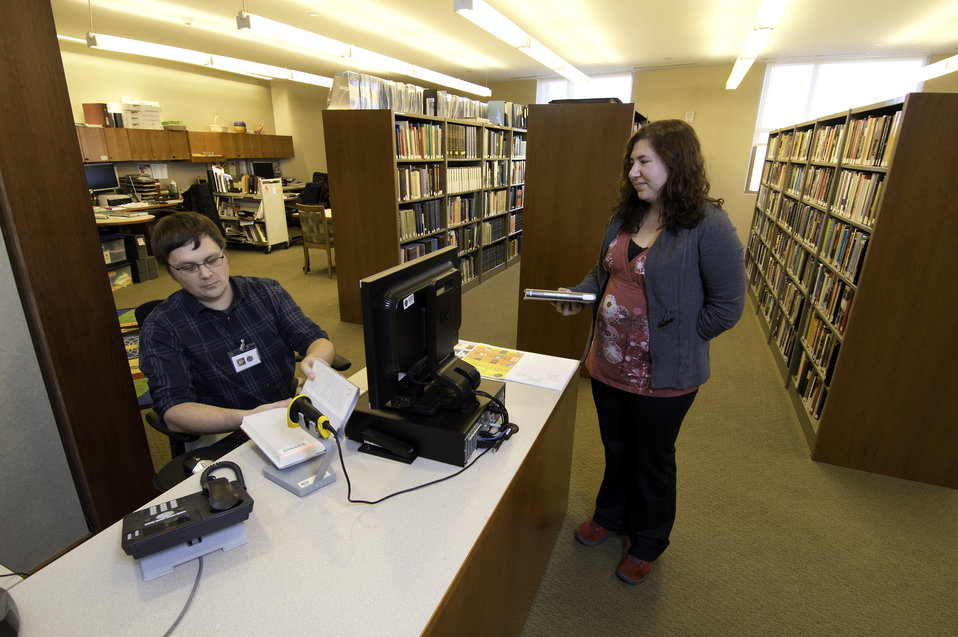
Librarian/Archivist for the Mohegan Tribe David Freeburg assists a Tribal member at the new Library and Archives located in the Mohegan Tribe Community Center and Government Building in Uncasville, CT on Nov. 18, 2013. A U.S. Department of Agriculture (USDA) Rural Development (RD) Community Facility Loan was provided to the Mohegan Tribe for the construction of the Mohegan Tribe Community Center and Government Building in Uncasville, CT. USDA’s RD Community Facilities Programs makes and guarantees loans to develop essential community facilities in rural areas and towns of up to 20,000 in population. Loans and guarantees are available to public entities such as municipalities, counties, parishes, boroughs, and special-purpose districts, as well as to non-profit corporations and tribal governments. The 160,000 square foot building Center hosts an exhibit celebrating federal recognition, history of Mohegan Chiefs, a new Library and Archives space, new Arts and Crafts room, a new gymnasium, and a new community room to enjoy food and family. The Center will continue the Tribe’s plan for growth and meeting the needs of its members.